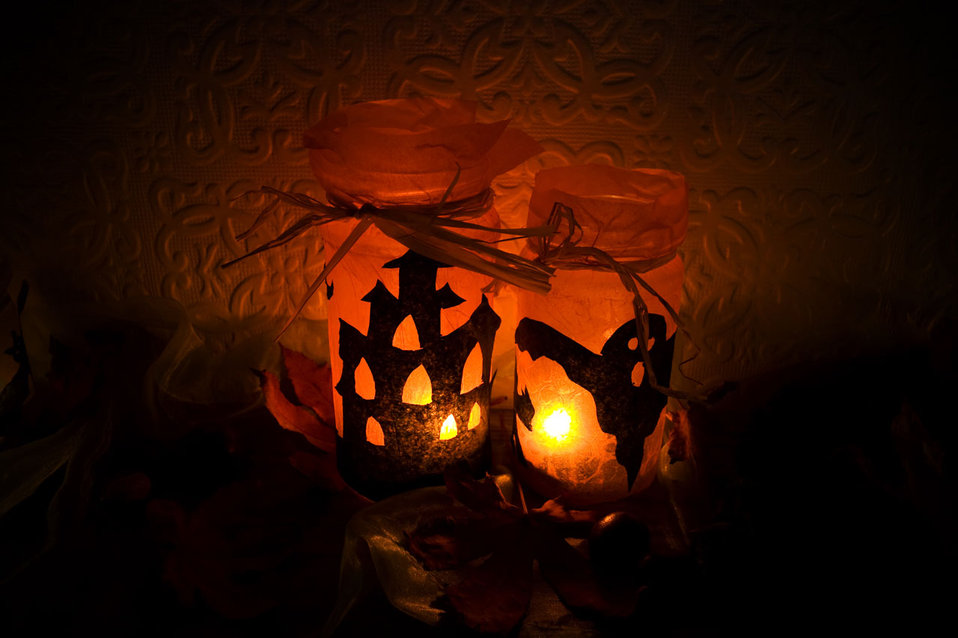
Halloween lights

Lights with halloween theme.